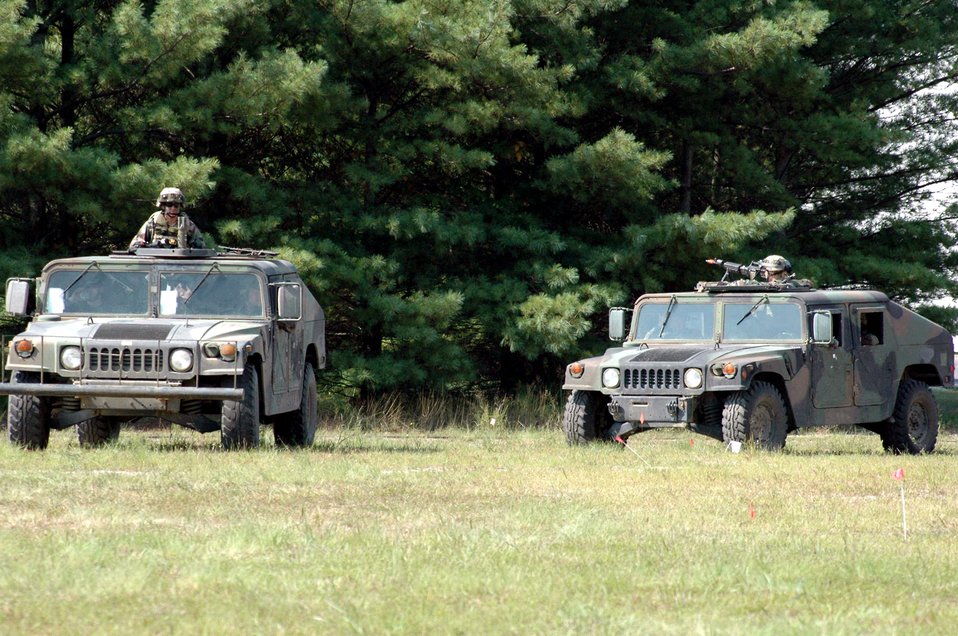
After one year, Phoenix Warrior course soaring high

Students in the Air Force Phoenix Warrior Training Course 07-6 practice convoy operations Aug. 29 at Naval Air Engineering Station Lakehurst, N.J. The course is taught by the U.S. Air Force Expeditionary Center's 421st Combat Training Squadron at Fort Dix, N.J.